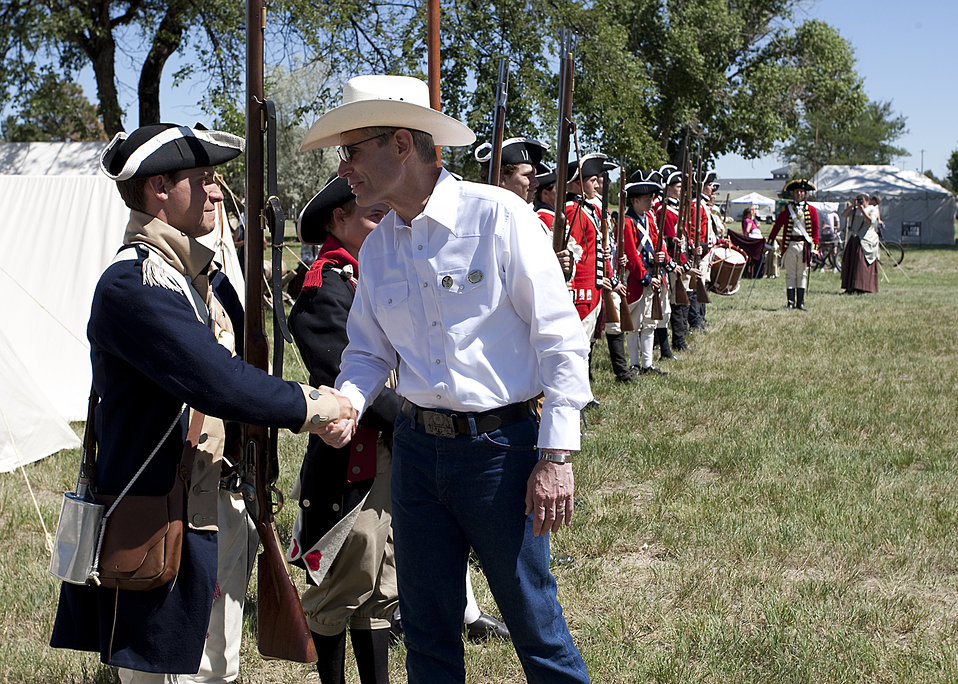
Air Force chief of staff visits Cheyenne

Air Force Chief of Staff Gen. Norton Schwartz thanks Andy W. Patterson for his participation in a military reenactment during Fort D. A. Russell Days July 23, 2011, held at F. E. Warren Air Force Base, Wyo.